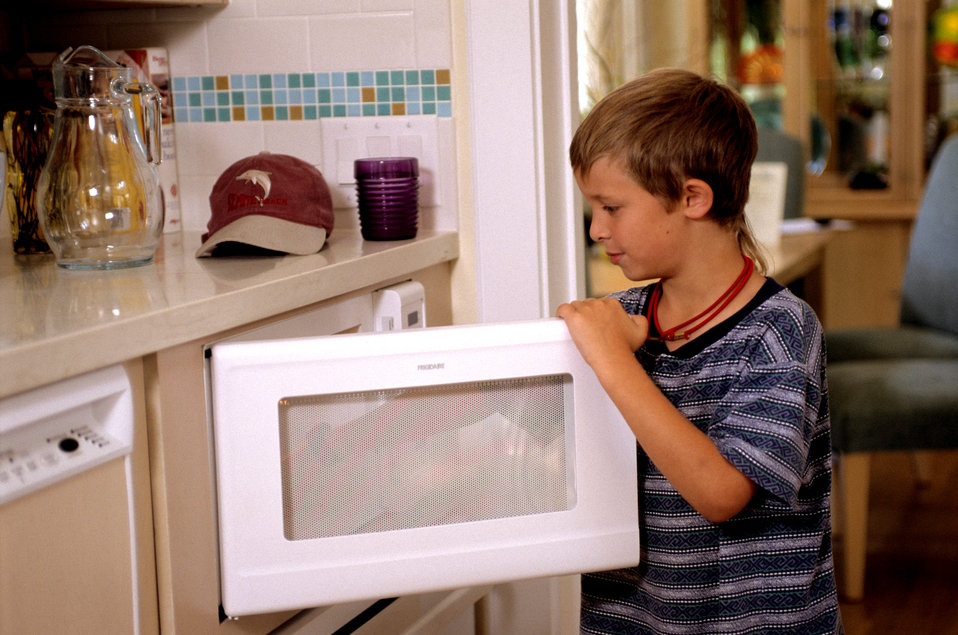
This was one of two images (see PHIL 9386), showing a young boy who was using a microwave oven that had been installed beneath a kitchen countertop. Installed at this level, it was easily accessible by shorter individuals, people who use wheelchairs, and as was the case here, children. This might be part of a universal array if another microwave were installed higher for other users.